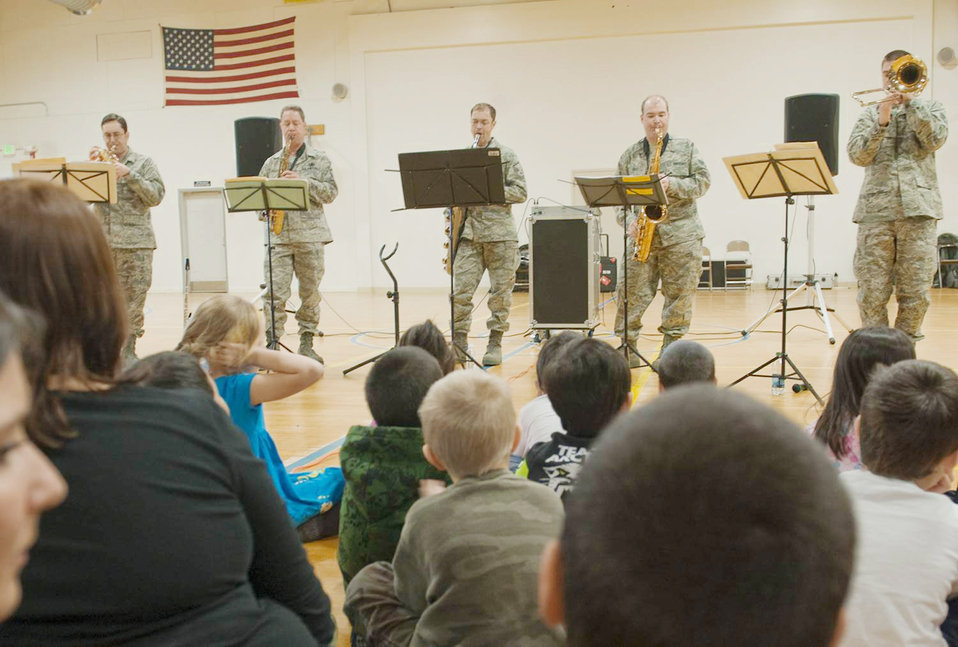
Northern Lights entertain native Alaskans during Operation Artic Care

Members of the Pacific Air Forces Northern Lights brass ensemble perform for students April 20, 2010, in Kotzebue, Alaska.